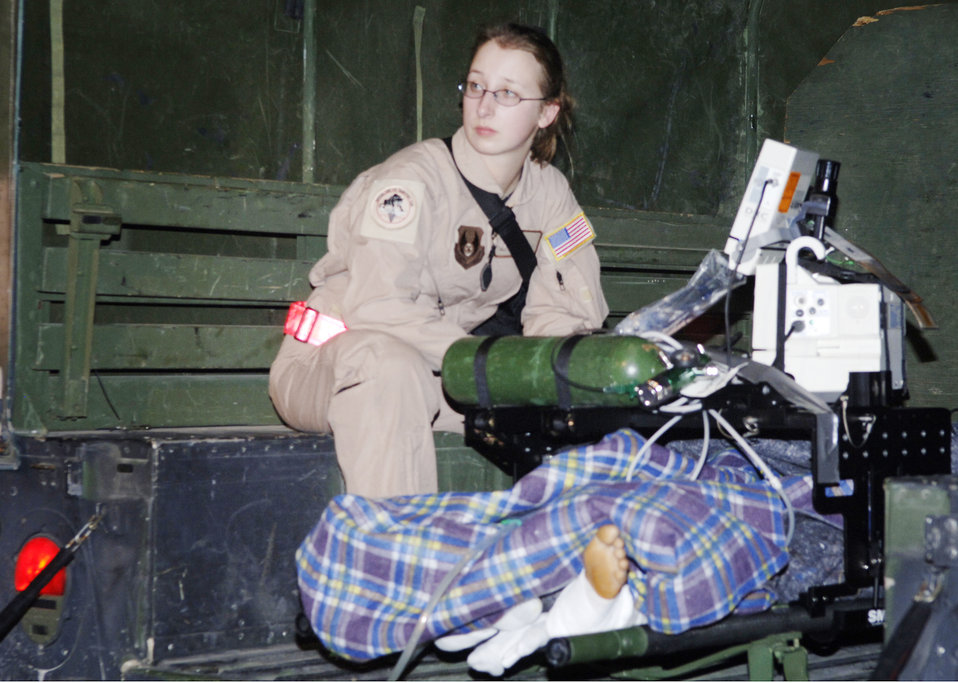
CCATT

Senior Airman Brooke Lohr, a cardiopulmonary technician and critical care air transport team member, prepares a patient for aeromedical evacuation from Port-au-Prince, Haiti, to Fort Lauderdale, Fla., Jan. 24, 2010. Senior Airman Lohr is deployed from the 88th Medical Group at Wright-Patterson Air Force Base, Ohio